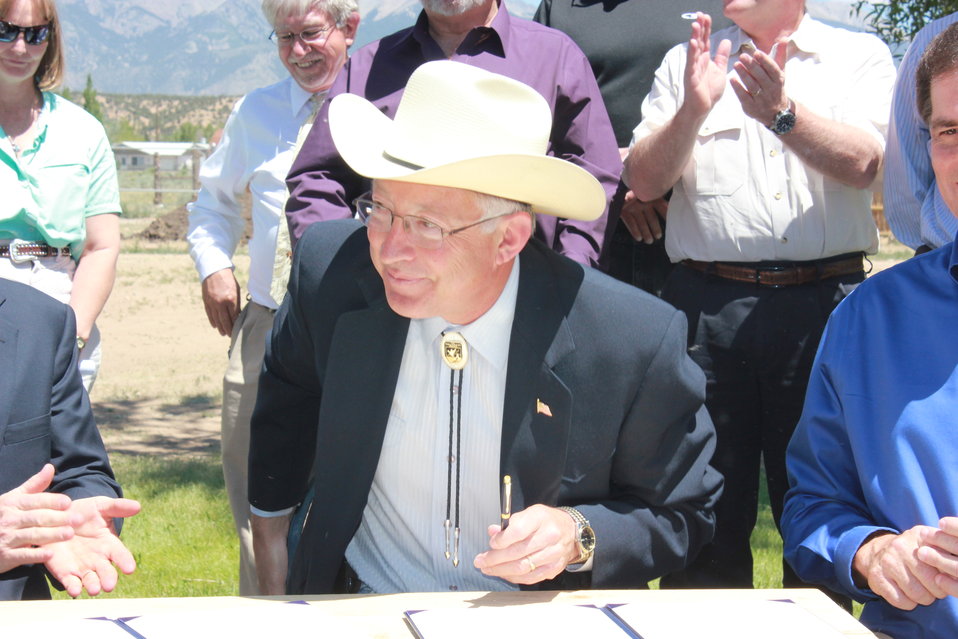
Historic Conservation Easement in Sangre de Cristo Mountains